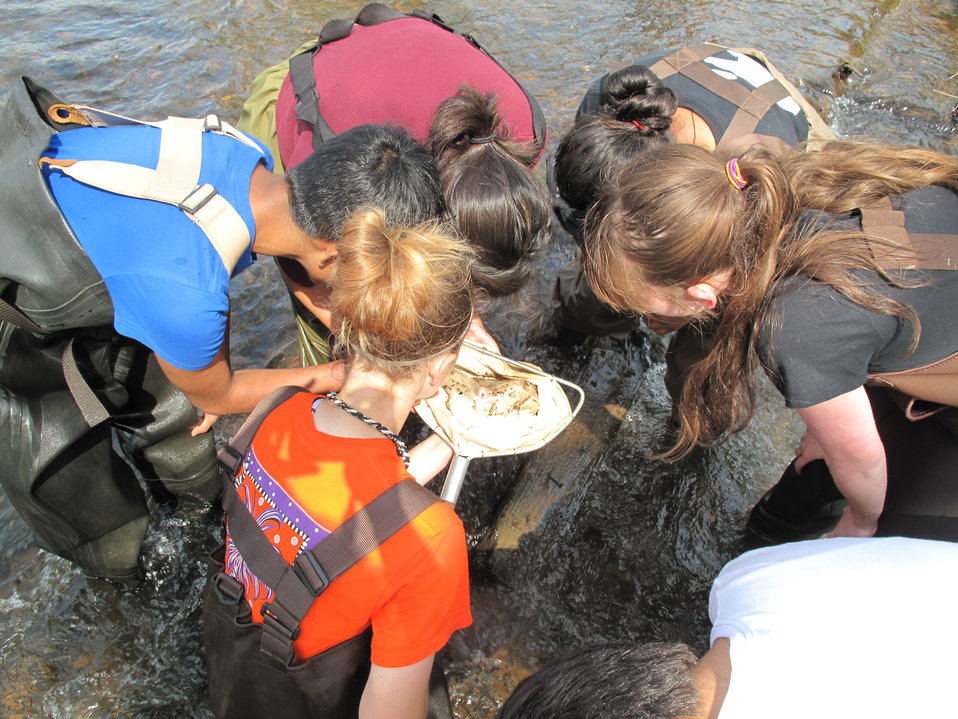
Students around a D-net

Over the course of four days in late April 2014, every eighth grade student at North Carolina’s Macon Middle School, Highlands School, Nantahala School, and Trimont Christian Academy visited Cartoogechaye Park, in Macon County, to learn about rivers.

The students rotated through four stations:
1) water chemistry where they had the opportunity to help test water from Cartoogechaye Creek to gain an idea of the stream’s water quality;
2) aquatic insects, where students collected and identified animals like mayflies and caddisflies, learning how life in the river reflects the health of the river
3) fish, where they were able to collect and identify fish in the stream, and then
4) stream flow, where they measured and calculated the downstream movement of water, including the velocity of the water and the total volume of water being moved per second.

The event was organized by the University of Georgia's Coweeta Long-Term Ecological Research (LTER) Program, which is based at the USFS Coweeta Hydrologic Laboratory. (coweeta.uga.edu/), with sizable support from the Land Trust for the Little Tennessee. Other supporters include the U.S. Fish and Wildlife Service, N.C. Natural Heritage Program, and N.C. Division of Water Resources.